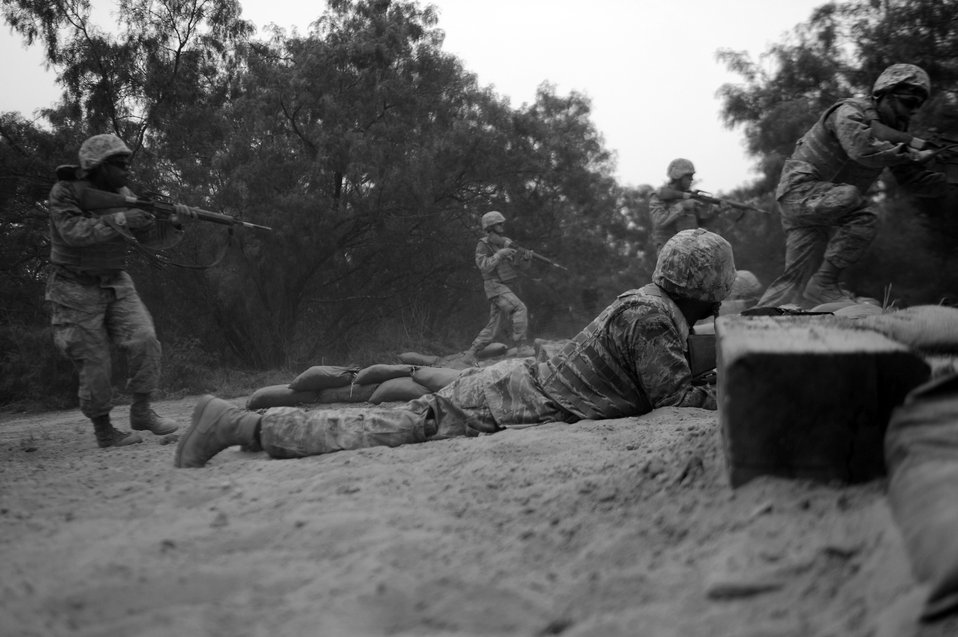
BEAST

Basic trainees go through their sixth week of Air Force basic military training at the Basic Expeditionary Airman Skills Training on May 25, 2011, at Lackland Air Force Base, Texas.